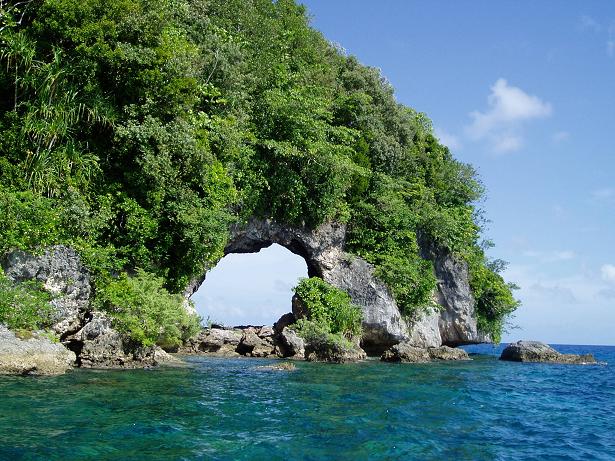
Română: Personal facuta in Palau.